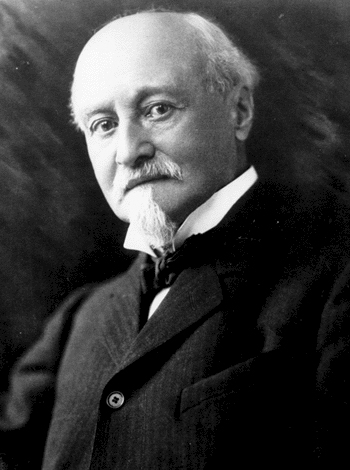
Octave Chanute came to the United States as a child. He spent most of his adult life as an engineer in the railroad industry, but later gained international fame in the study of aeronautics.